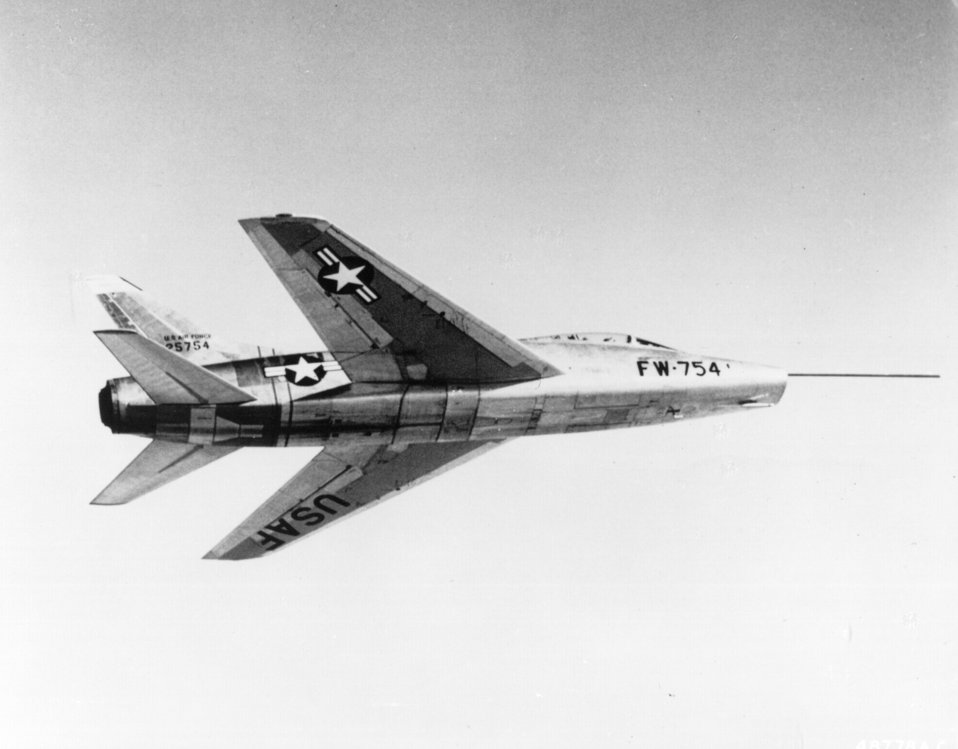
The F-100 Super Sabre

1950's -- The F-100